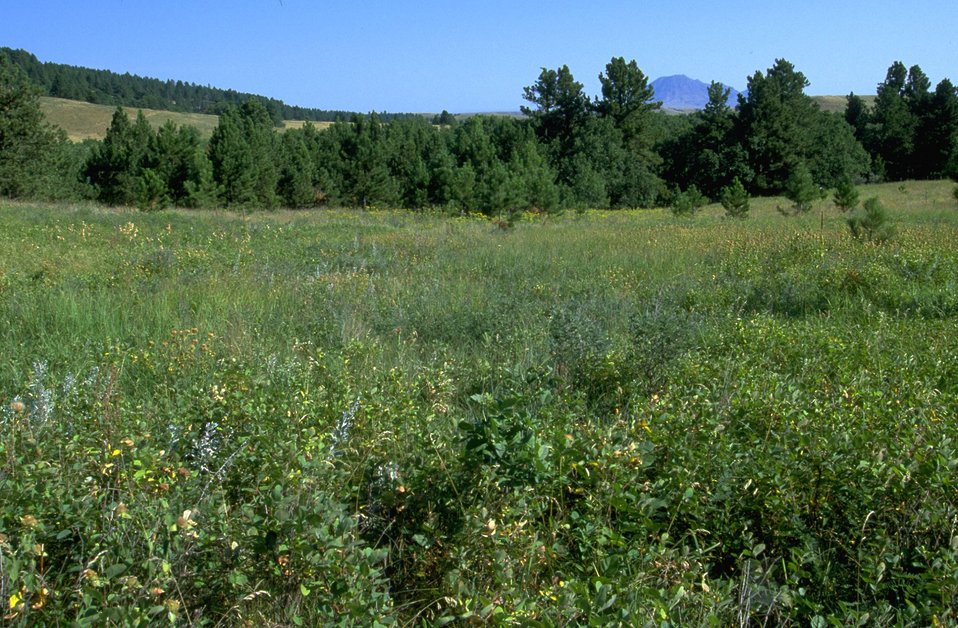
Vegetation with Ponderosa Pine in the background